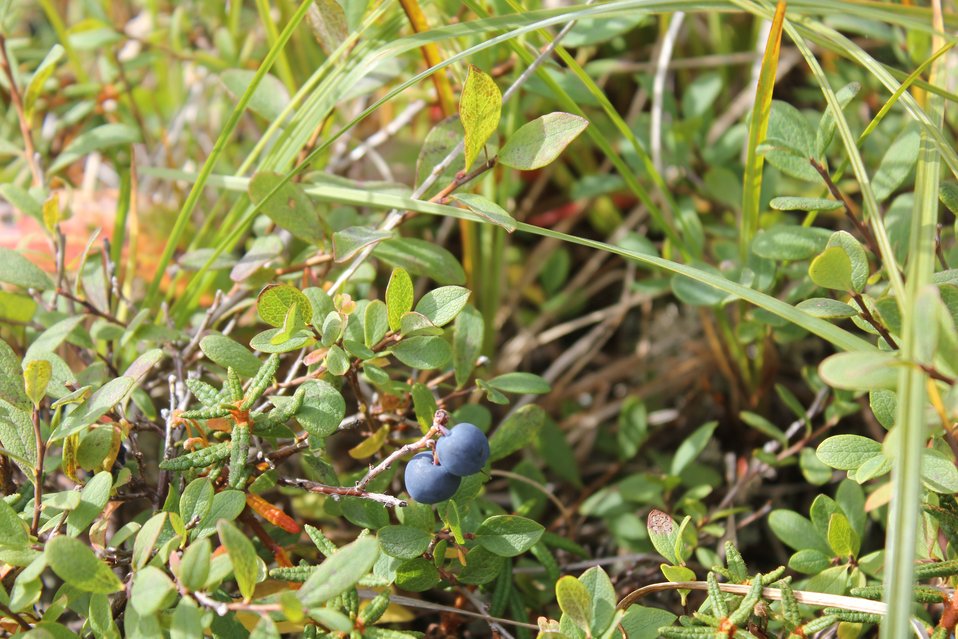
Blueberries on the tundra (Vaccinium sp.)